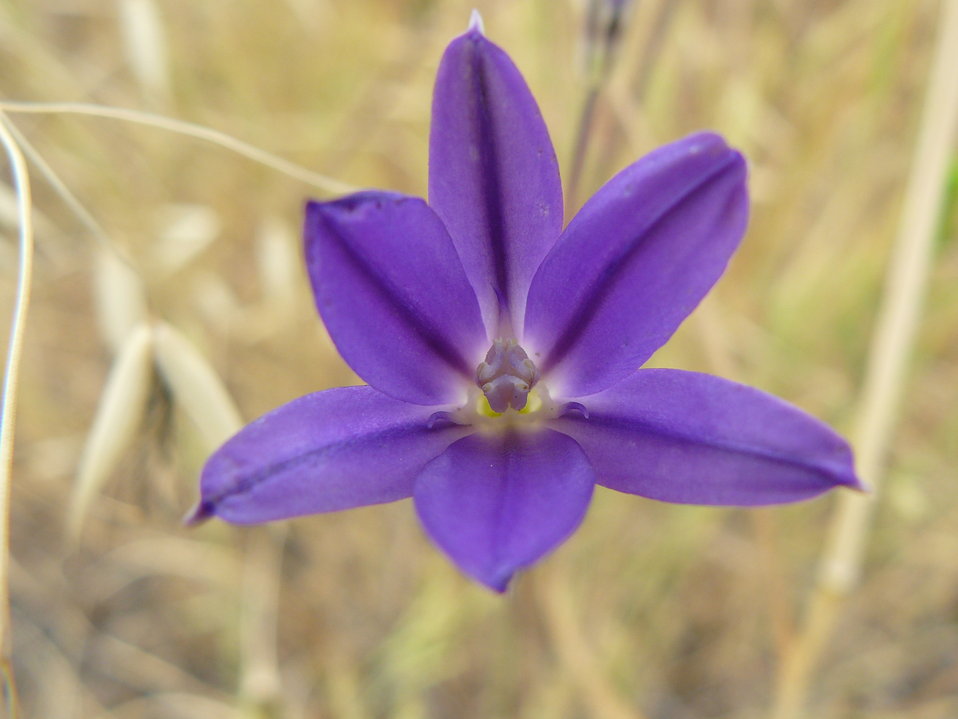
Brodiaea filifolia plant also known as thread-leaved brodiaea

Thread-leaved brodiaea is a purple-flowered perennial herb with flower stalks 8 to 16 inches tall. It blooms from late April to early June and is typically found on gentle hillsides, valleys, and floodplains within moderately moist plant communities having clay soils and varying amounts of sand and silt. This is a federally threatened plant occuring in portions of Los Angeles, San Bernardino, Riverside, Orange, and San Diego counties, California.